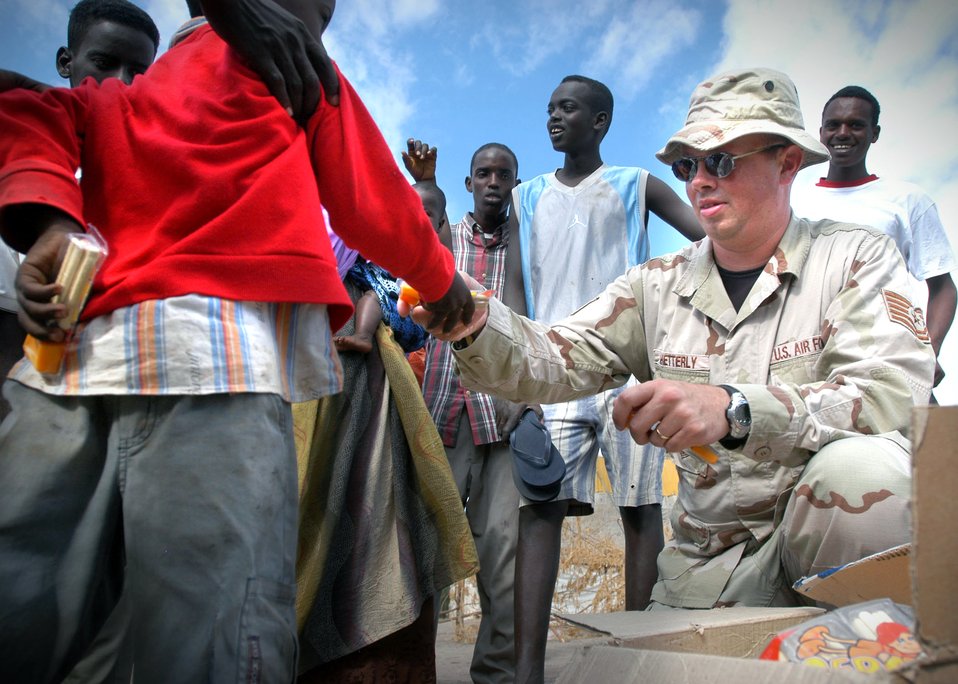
World powers bring soft touch to African neighbors

Tech. Sgt. Chris Shetterly gives away candy to children Jan. 9 during a visit to Damerjong district, Djibouti. The candy was donated by the 350th Civil Affairs Company, attached to the Combined Joint Task Force - Horn of Africa.